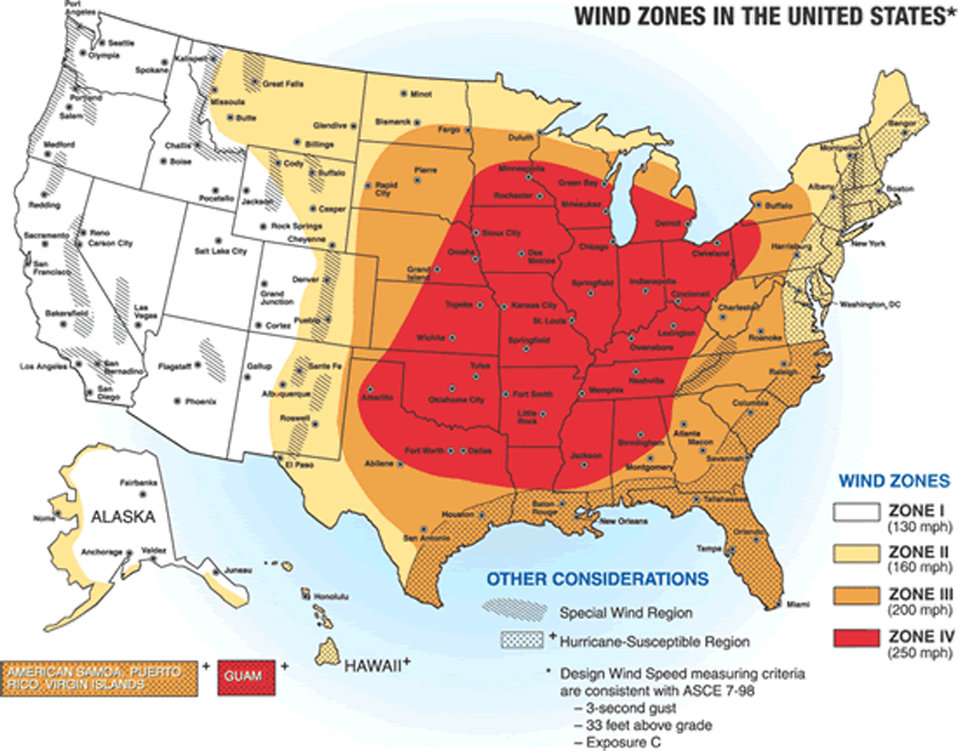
Wind zone map shows how the frequency and strength of extreme windstorms vary across the United States. Wind speeds in Zone IV (red), where the risk of extreme windstorms is greatest, can be as high as 250 miles per hour.